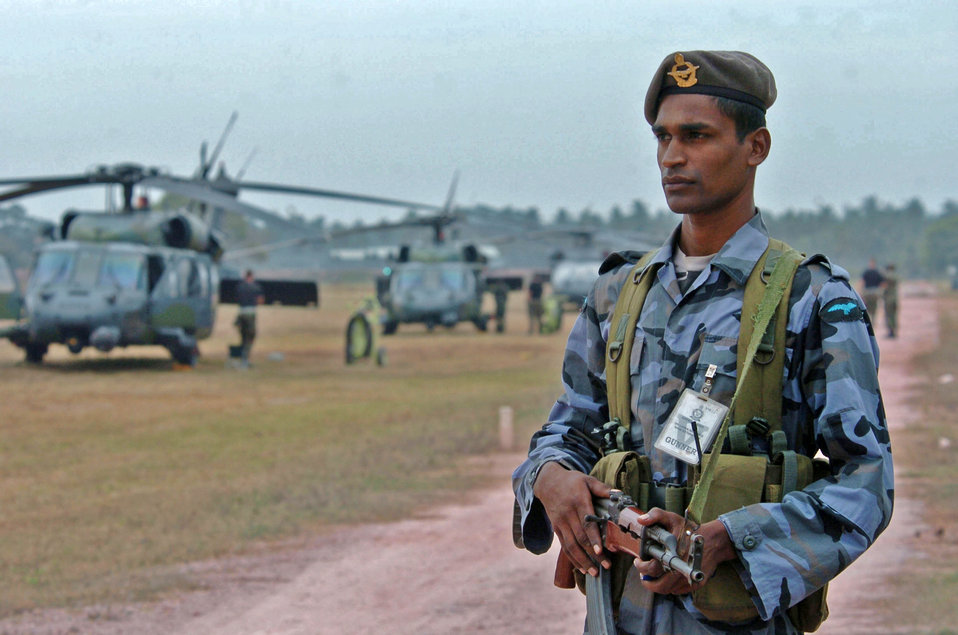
Support in Sri Lanka

KATUNAYAKE AIR FORCE BASE, Sri Lanka -- A Sri Lankan airman provides security for HH-60G Pave Hawk helicopters deployed from the 33rd Rescue Squadron at Kadena Air Base, Japan. The Airmen are helping deliver relief supplies and equipment to various tsunami-stricken locations.